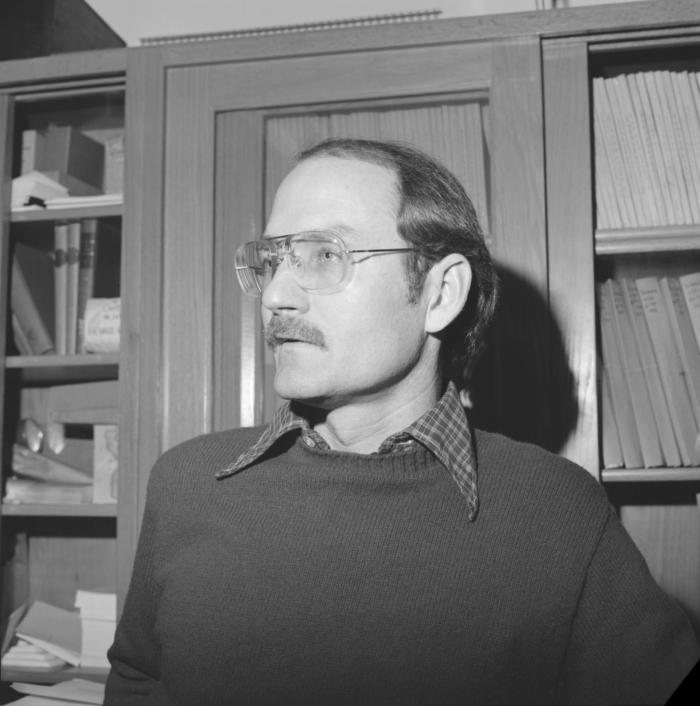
This photograph depicts former Centers for Disease Control microbiologist, and Deputy Director of the National Center for Infectious Diseases, Dr, Joseph E. McDade.